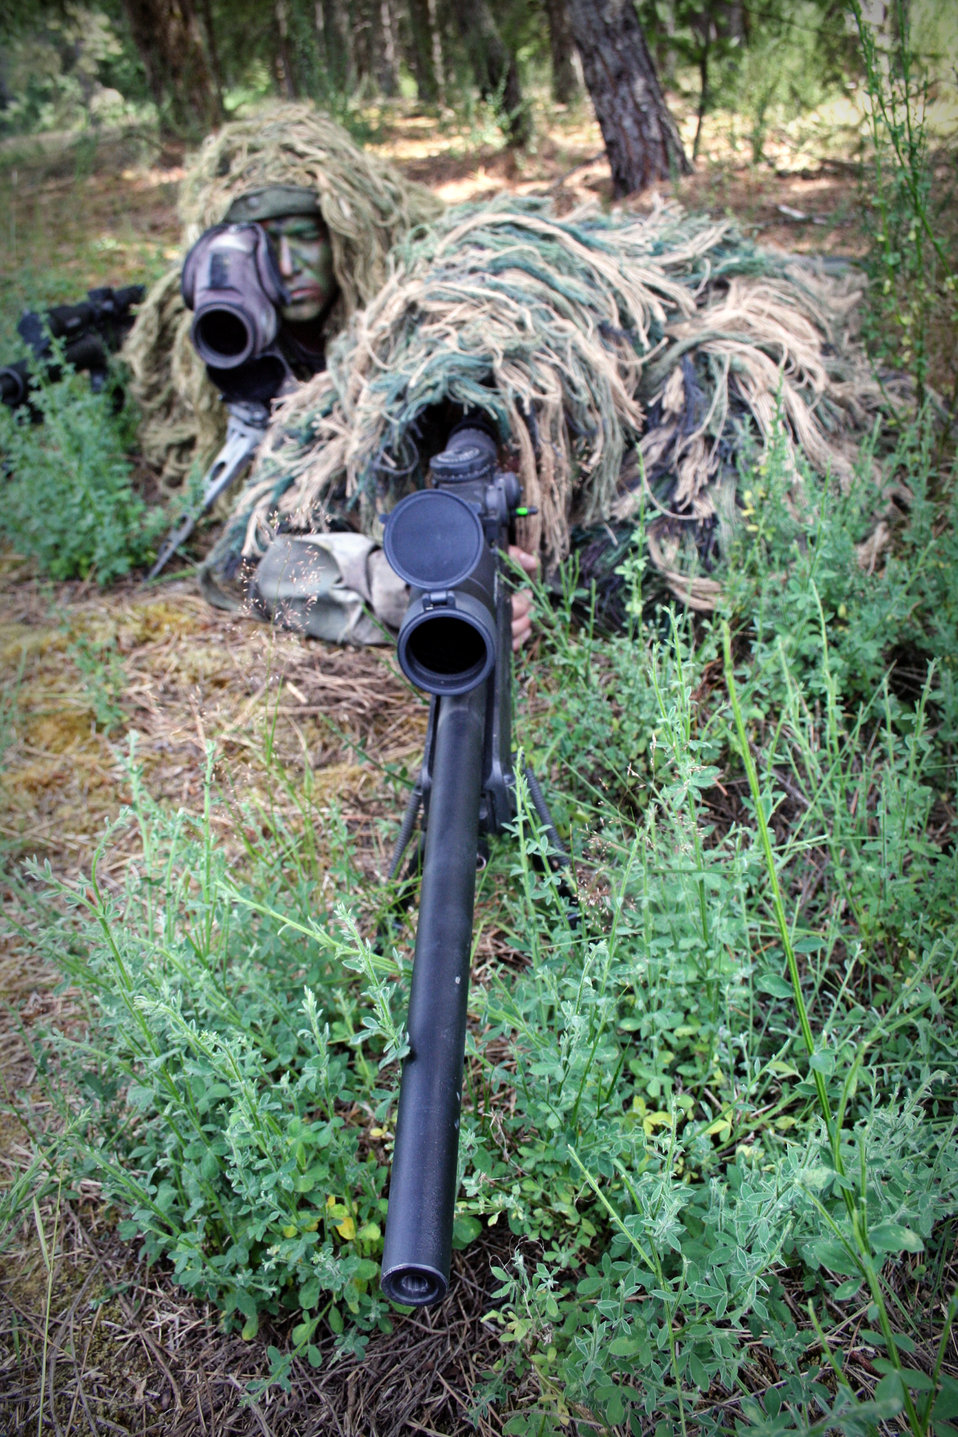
Headshot!

Staff Sgt. George Reinas and Senior Master Sgt. Nathan Brett practice sniper skills for an Air Mobility Rodeo 2011 scenario July 27, 2011, on a range at Joint Base Lewis-McChord, Wash. Brett and Reinas were the event coordinators for the advanced marksmanship event.